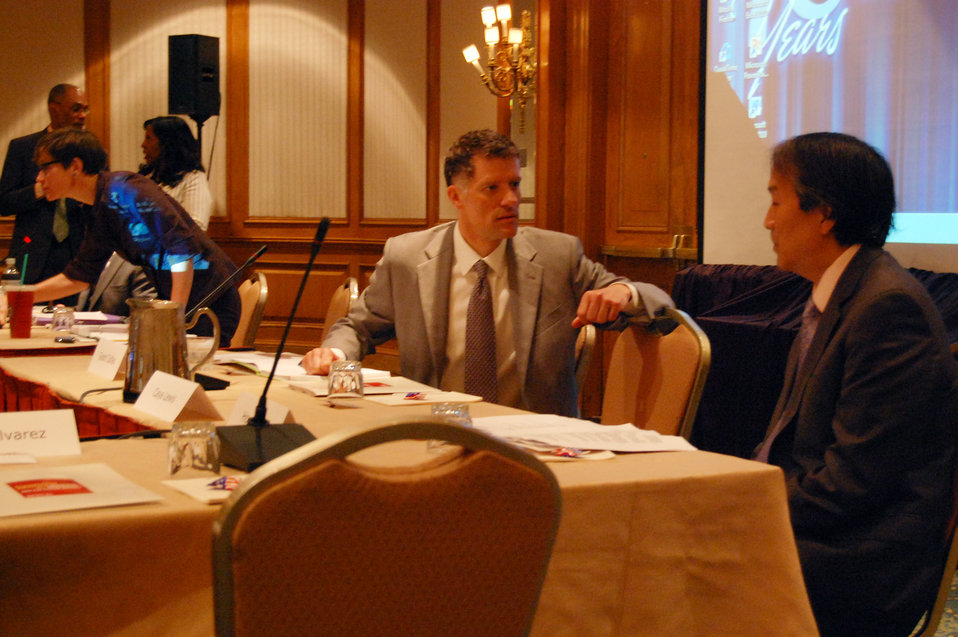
PACHA conf033